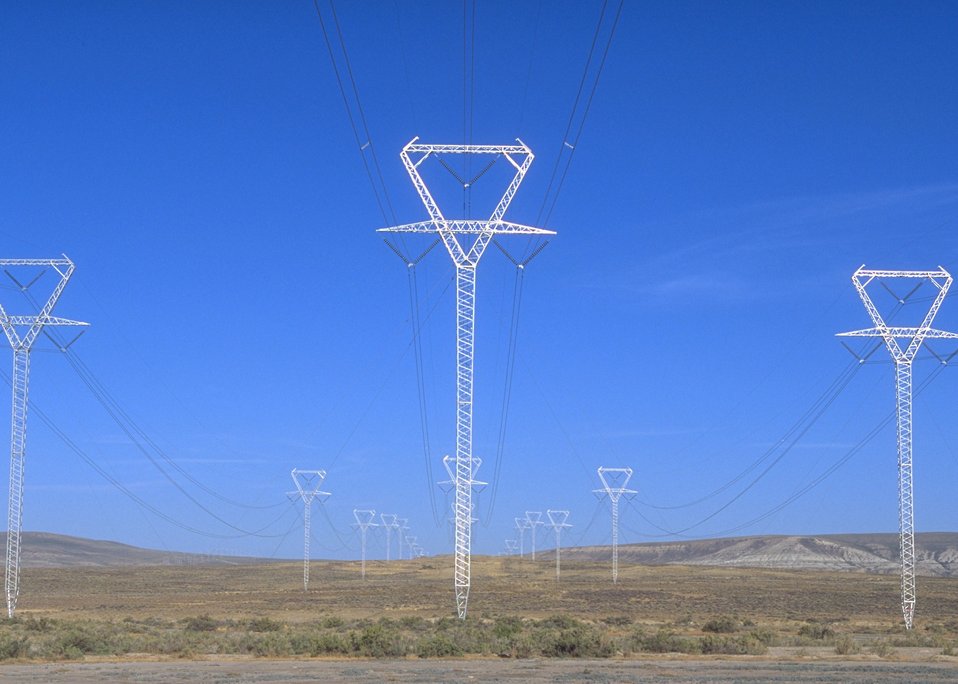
ROW's - Electric power lines near Rock Springs, WY.